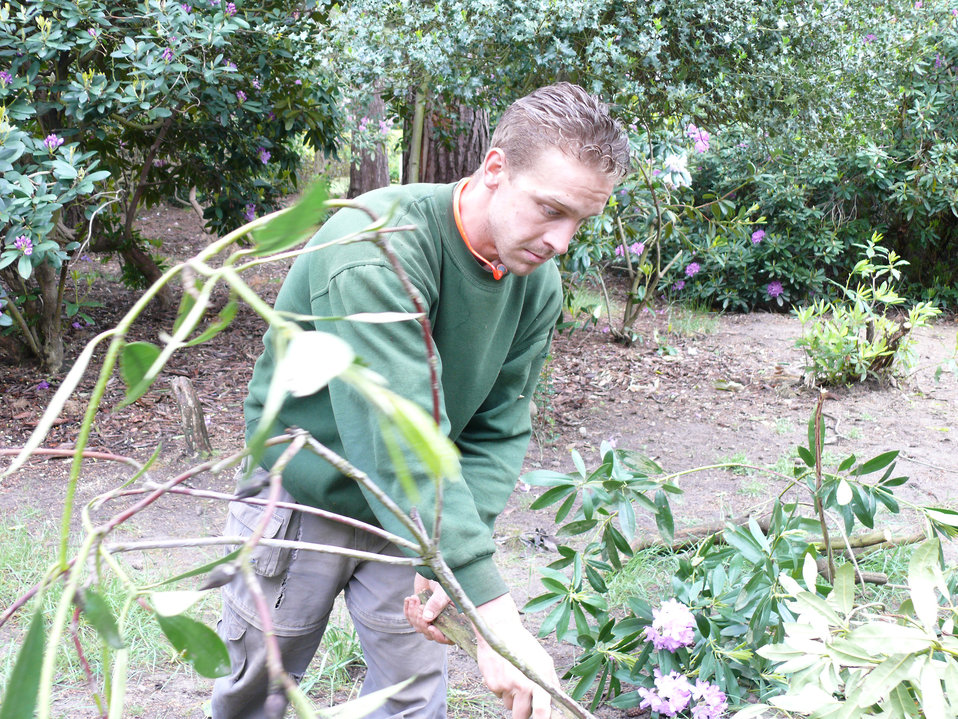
A place for remembrance

Brookwood American Military Cemetery groundskeeper Stephen Leigh readies the cemetery May 23 for the upcoming Memorial Day weekend.